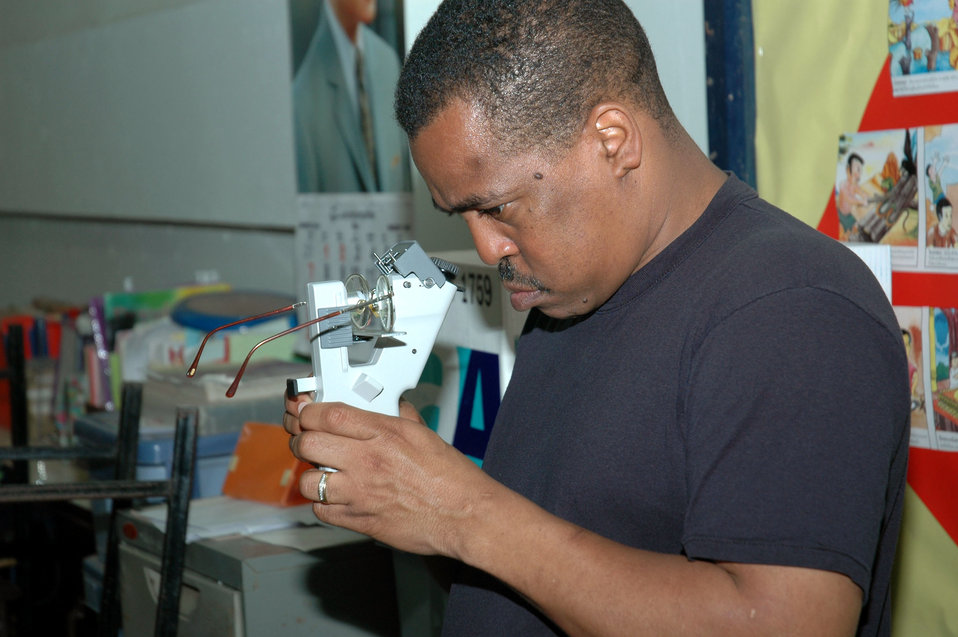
Air Force team performs goodwill mission in Thailand

Tech. Sgt. Edward Hill Jr. checks the prescription on a patient's eyeglasses Feb. 6 during a goodwill visit to the Thairat 72 School in Udon Thani, Thailand. Approximately 60 people were seen during the four-hour screening. This medical-dental goodwill mission is the second civil-action project in Thailand as part of exercise Cope Tiger 2007. Sergeant Hill is an optometry craftsman from the 18th Aerospace Medicine Squadron at Kadena Air Base, Japan.